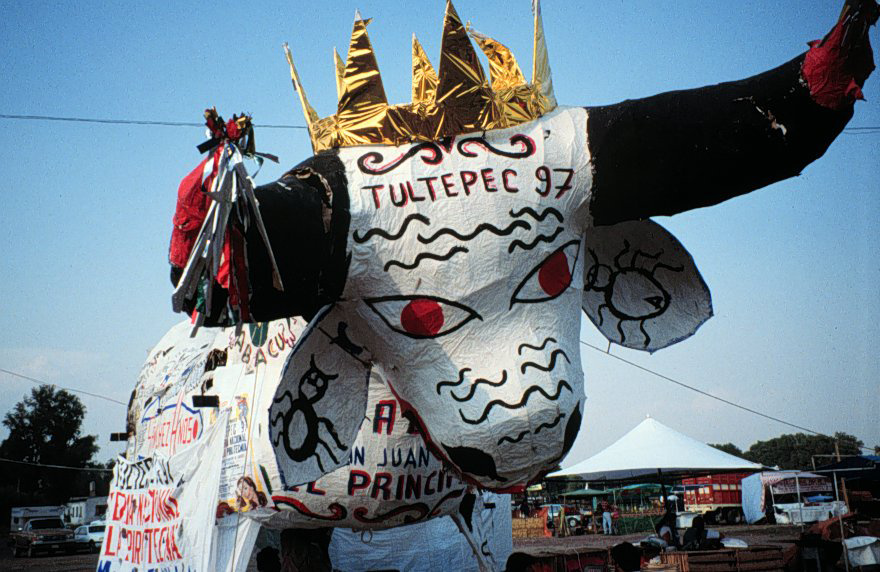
This 1997 photograph shows a papier-m��ull that had been featured in a fireworks festival in Tultepec, Mexico.